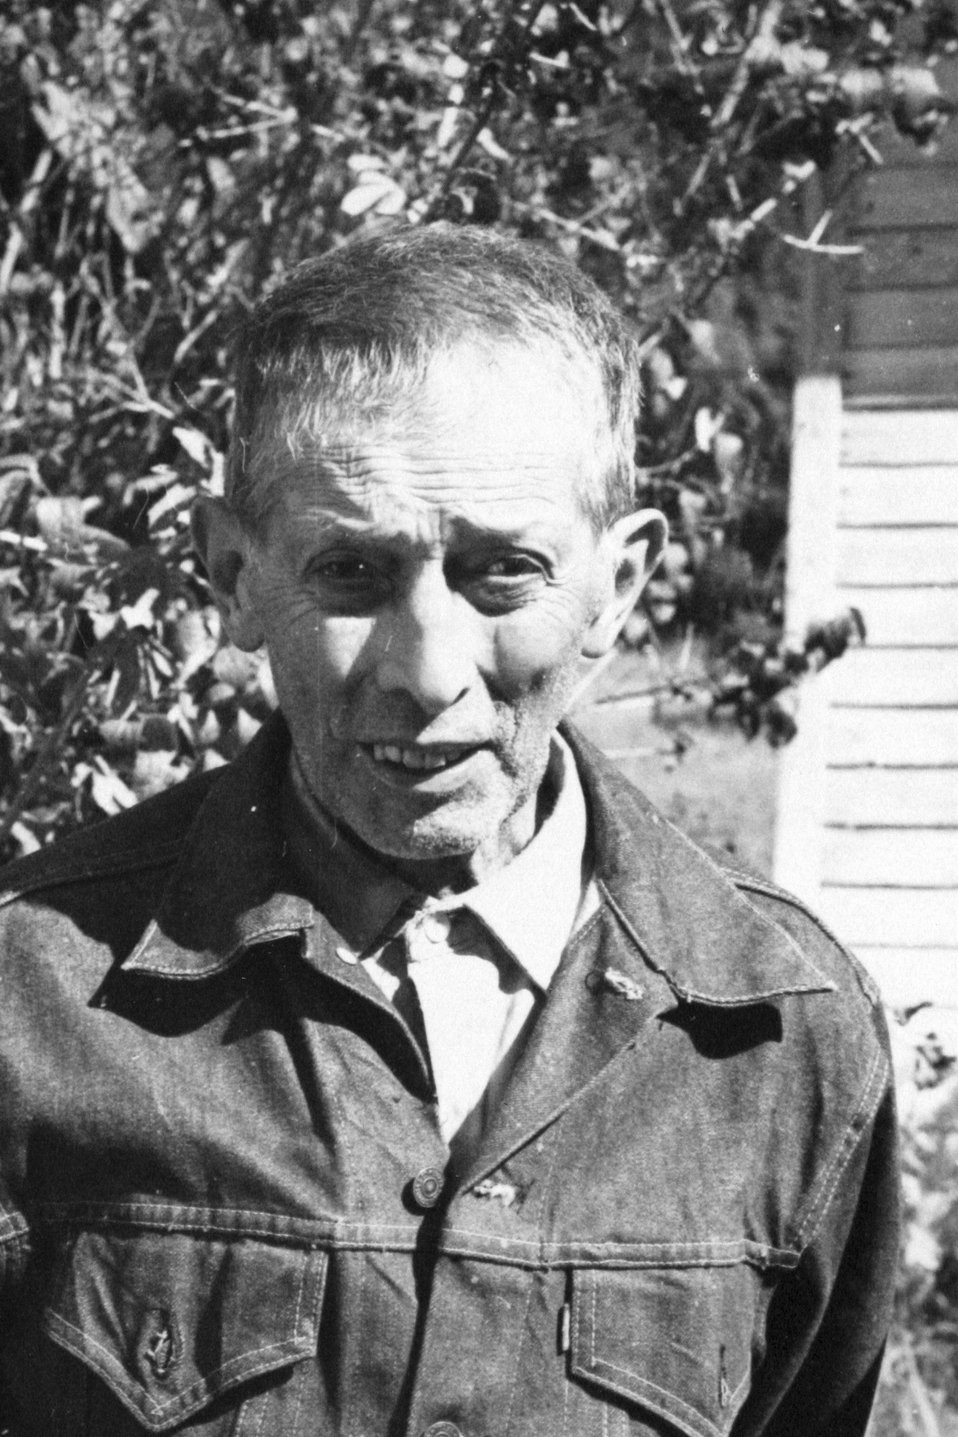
Dean Walker